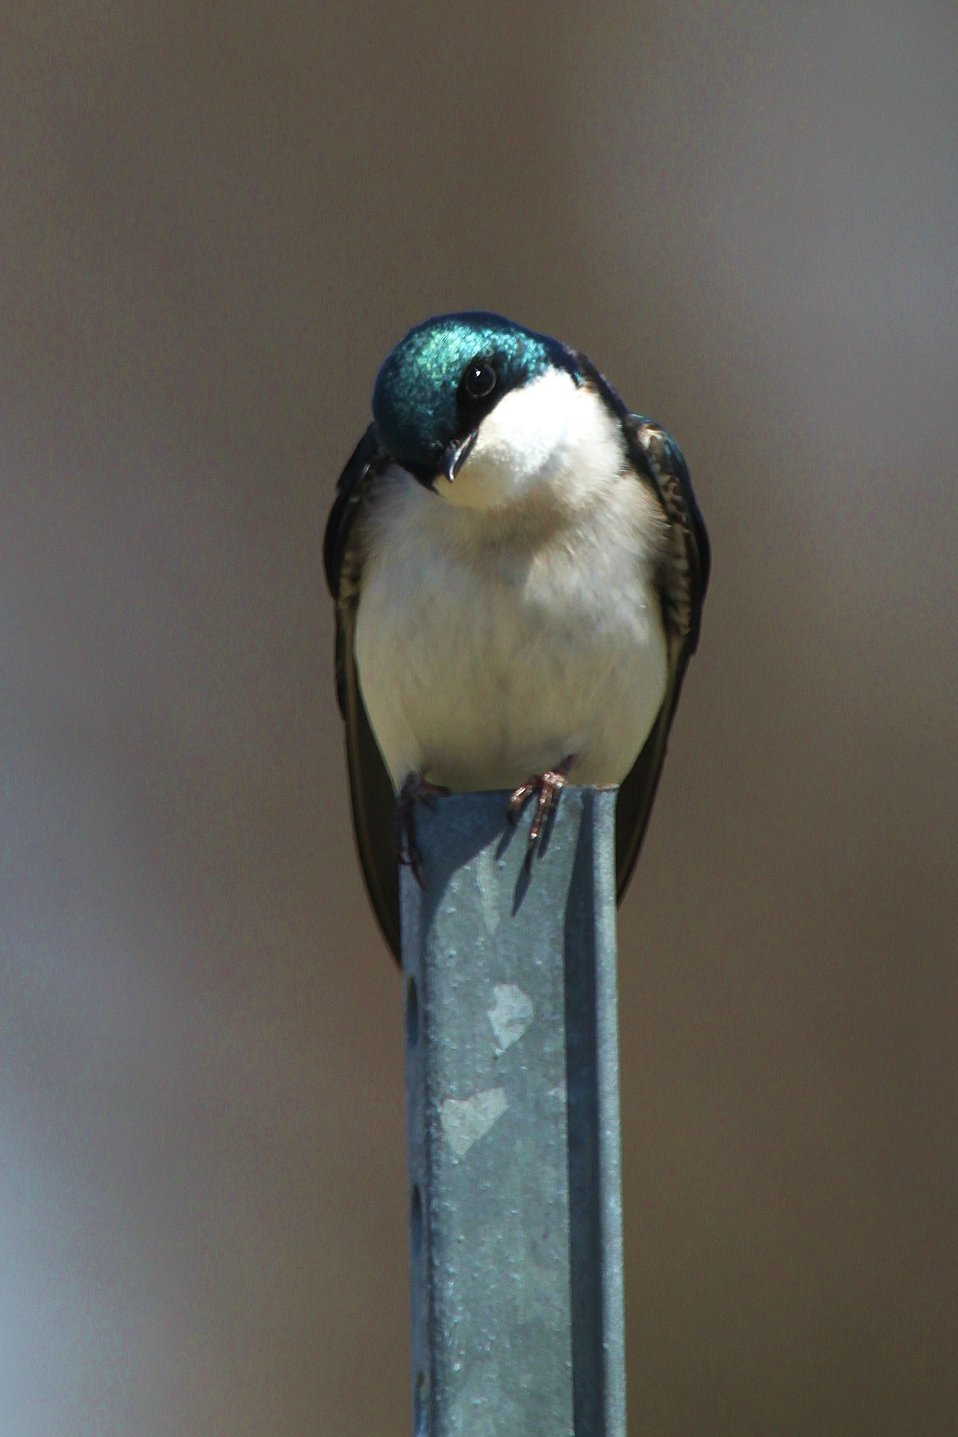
Tree Swallow at Missisquoi National Wildlife Refuge